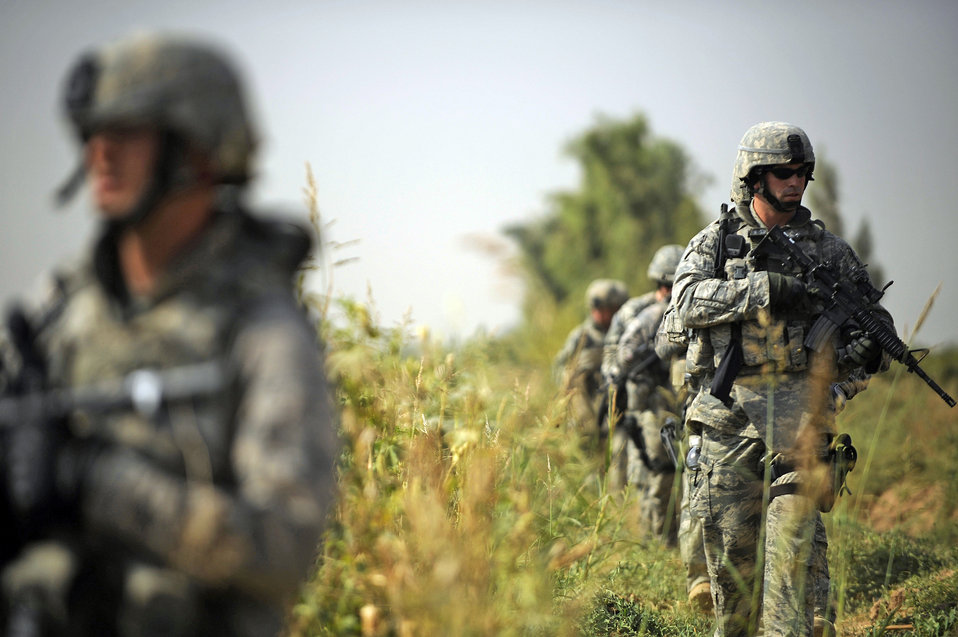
Operation Iraqi Freedom

Airmen from the 532nd Expeditionary Security Forces Squadron search a field during a force protection patrol Oct. 17, 2009, outside Joint Base Balad, Iraq. Members of the 532nd Expeditionary Security Forces Squadron patrol to provide a security presence intended to deter anyone who would do harm to the people who live and work at the base.